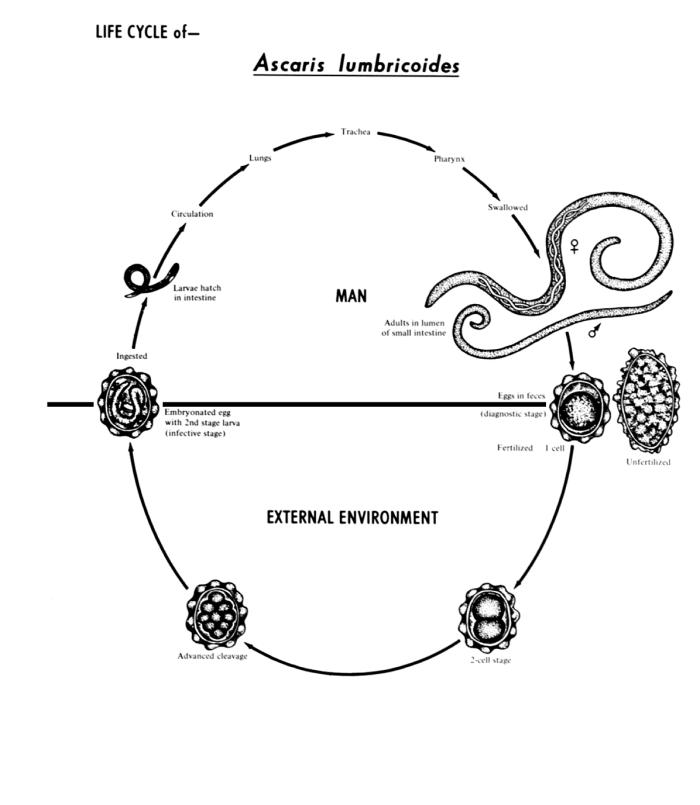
This diagram depicts the various stages in the life cycle of the intestinal roundworm nematode Ascaris lumbricoides.